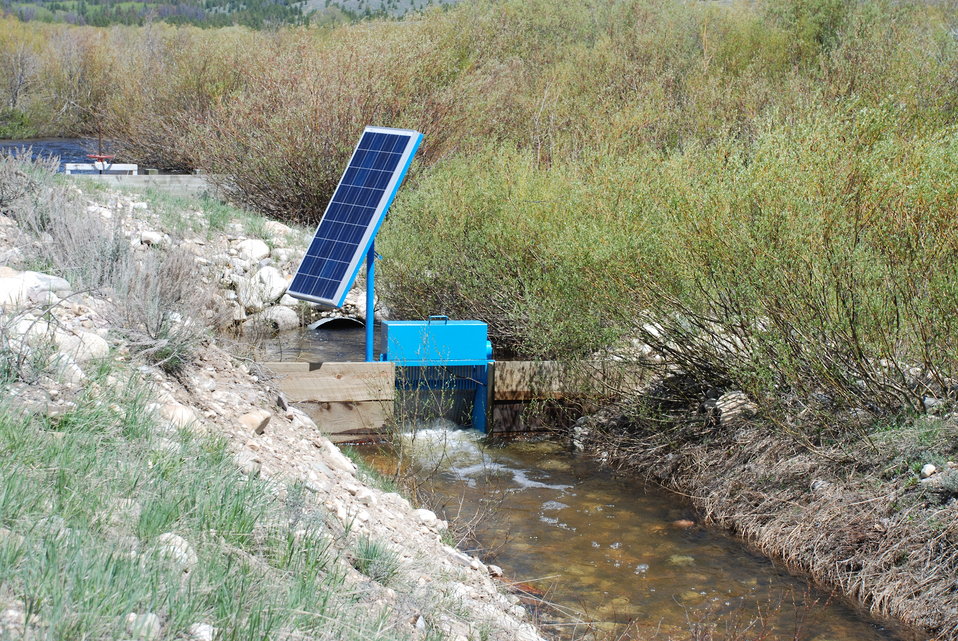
Regional Leadership Visit to Montana 2014